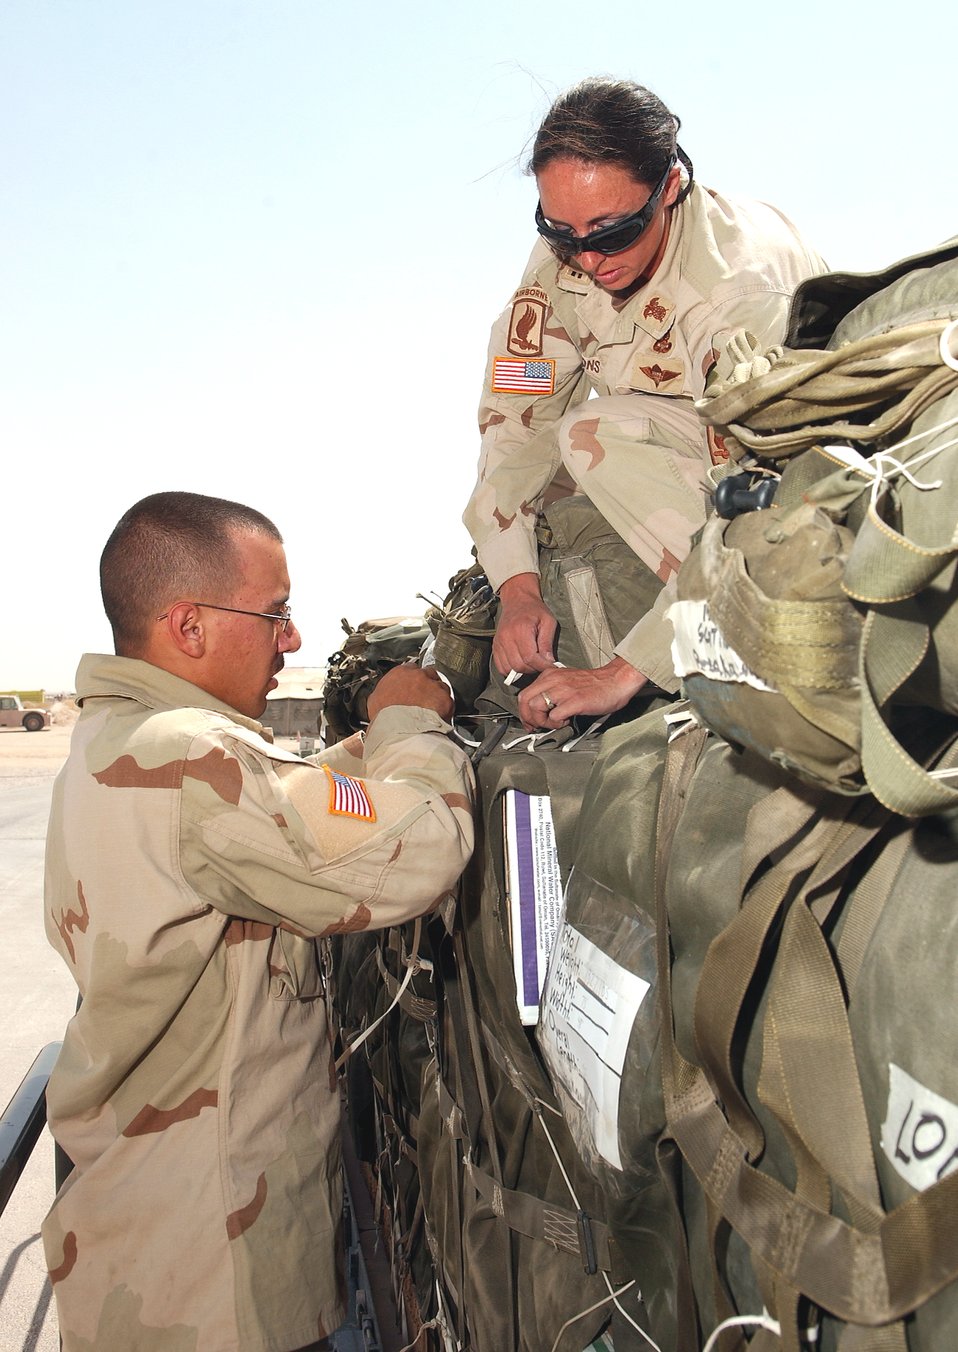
-130J conducts first-ever combat airdrop

SOUTHWEST ASIA -- Army Chief Warrant Officer 2nd Class Eugenia Emmons (right) and Private 1st Class Isiah Rodriguez make final checks on a container delivery system's parachute rigging before loading it onto a C-130J Hercules for airdrop into Afghanistan June 30. The mission was the first-ever combat airdrop for the new J-model transport. It supported an Army air assistance request for troop re-supply and civic assistance to be dropped in the vicinity of Kandahar, Afghanistan.